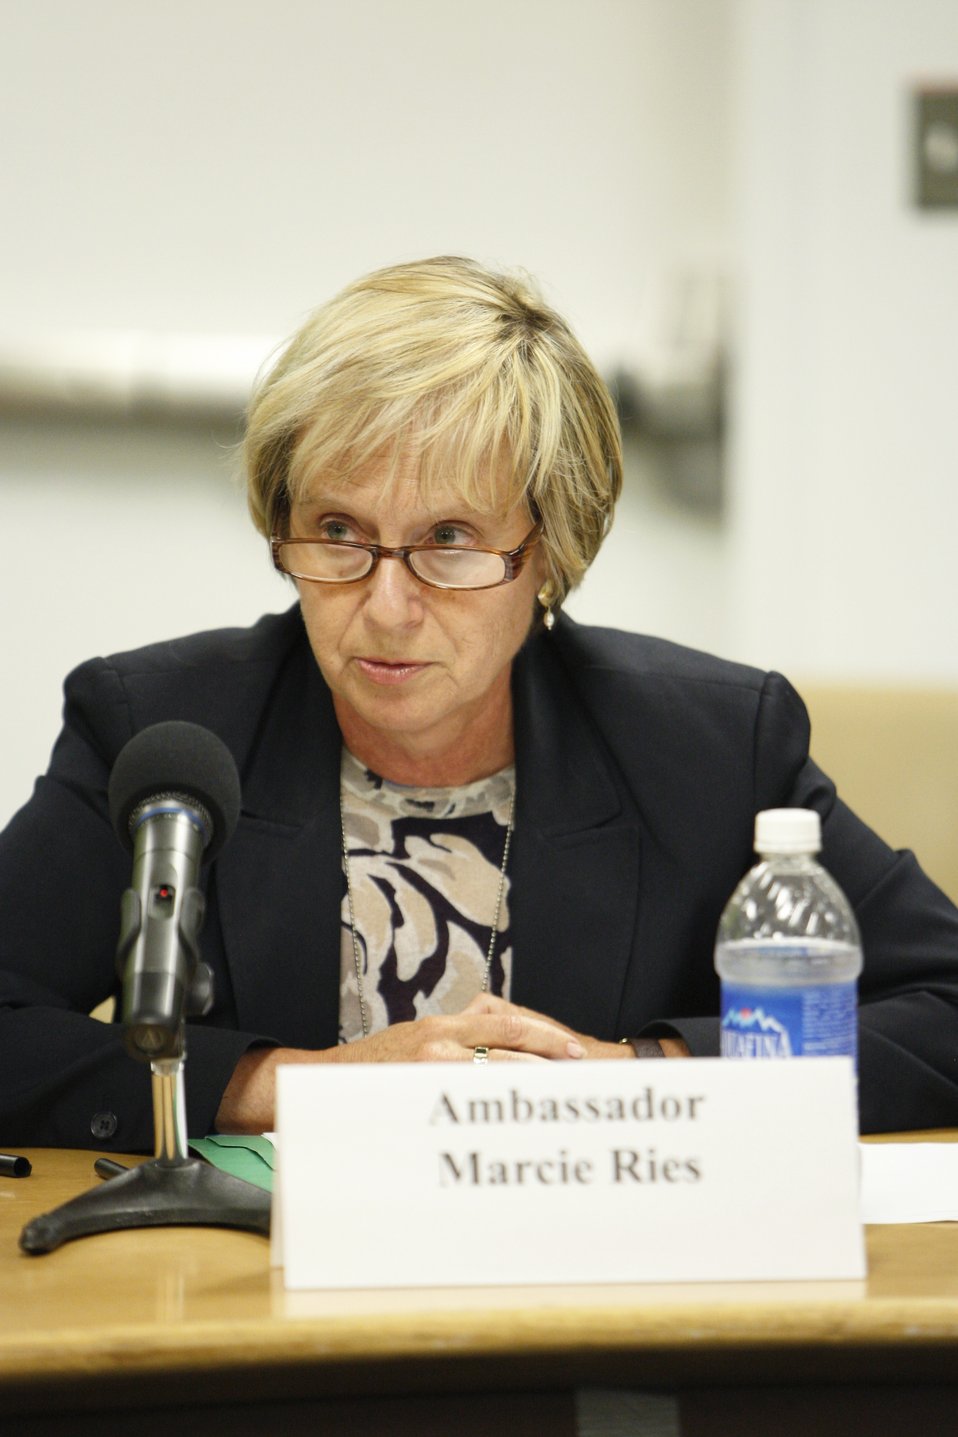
Deputy Assistant Secretary Ries Participates in a High Level Workshop Against Nuclear Tests

Deputy Assistant Secretary of State for Arms Control, Verification and Compliance Marcie Ries participates in a High Level Workshop Against Nuclear Tests -- From Here to 2015: Meeting the Targets of the NPT Action Plan, where she discussed U.S. Priorities for the NPT and Moving Forward at the EastWest Institute in New York, New York, on September 1, 2011.